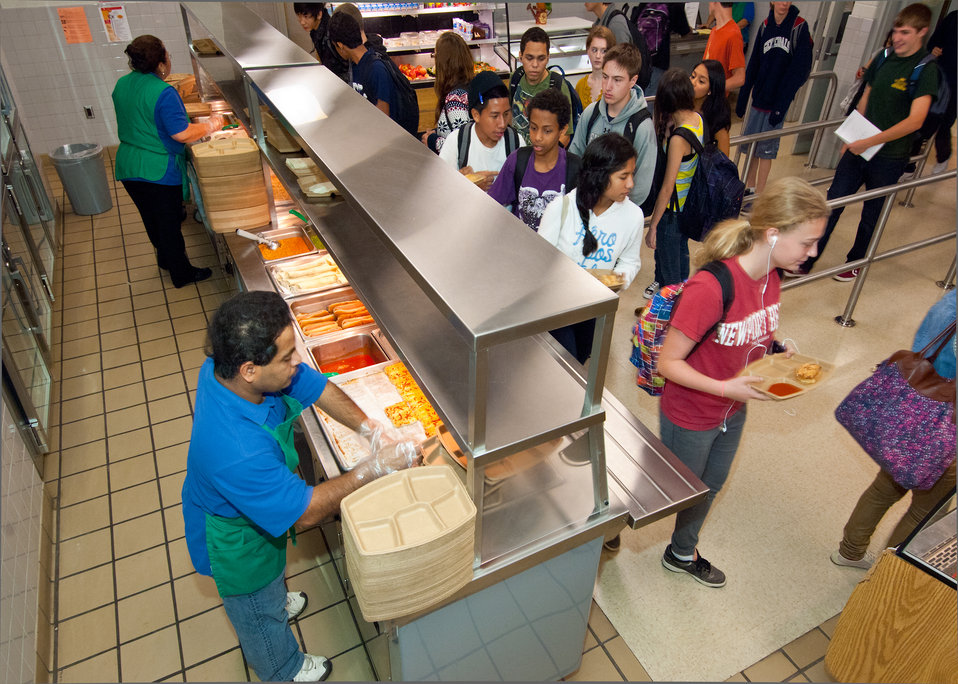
Maria Mendez (left) and Jilver Castillo (right), Arlington Food Services serve lunch of Baja Fish Taco wraps, Turkey Hot Dogs, Cherry Tomatoes w/dip, Baked Beans and Fresh Fruit for Washington-Lee High School students in Arlington, Virginia on Wednesday, October 19, 2011. The National School Lunch Program is a federally assisted meal program administered by the United States Department of Agriculture, Food and Nutrition Service operating in public, nonprofit private schools and residential child care institutions. It provides nutritionally balanced, low-cost or free lunches to children each school day.